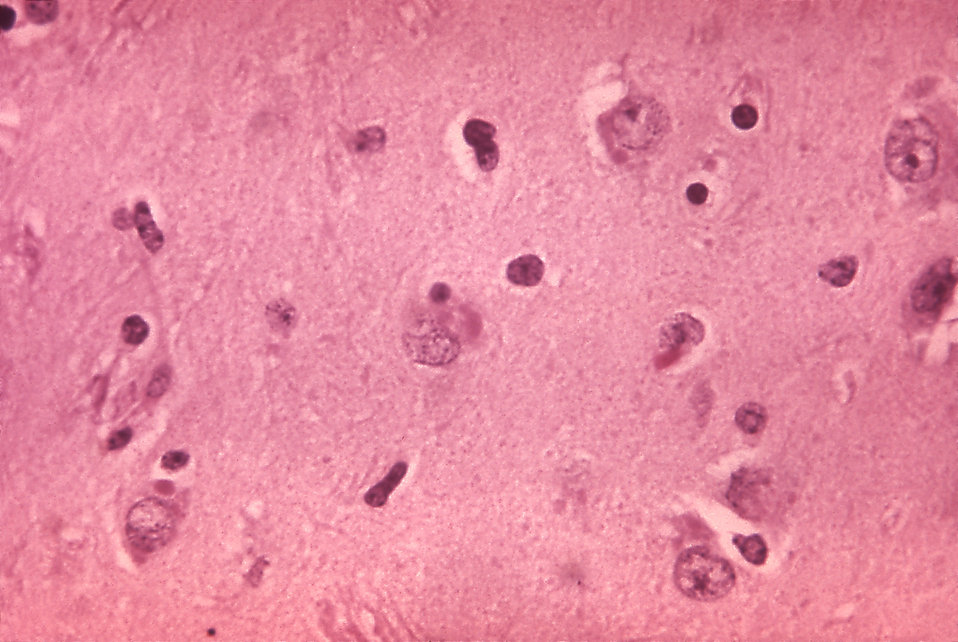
This micrograph, prepared using an H&E stain, depicts the histopathologic changes associated with rabies encephalitis.